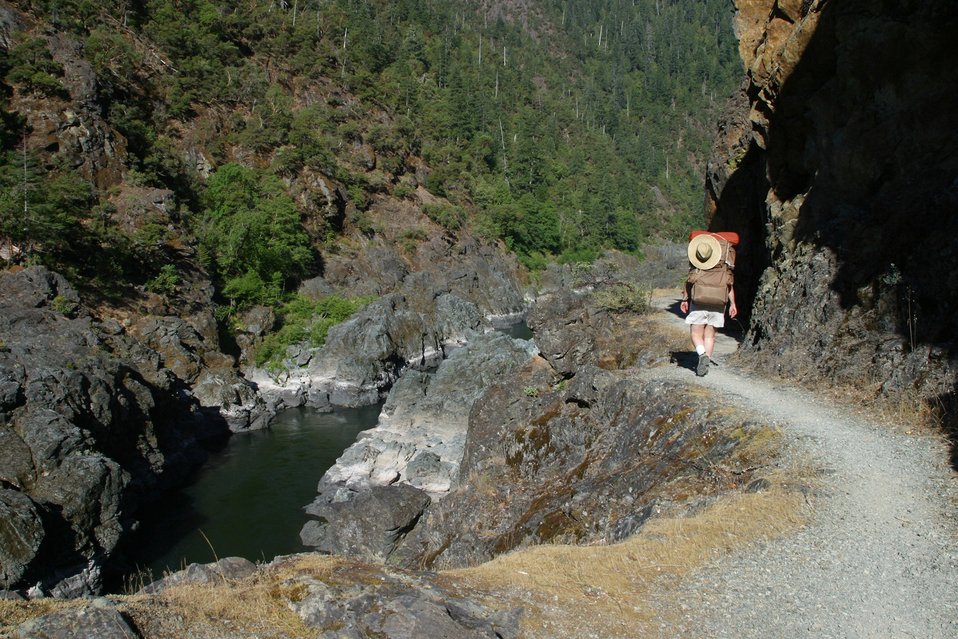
Hiking the Rogue River Trail between Mule Creek and Blossom Rapids.